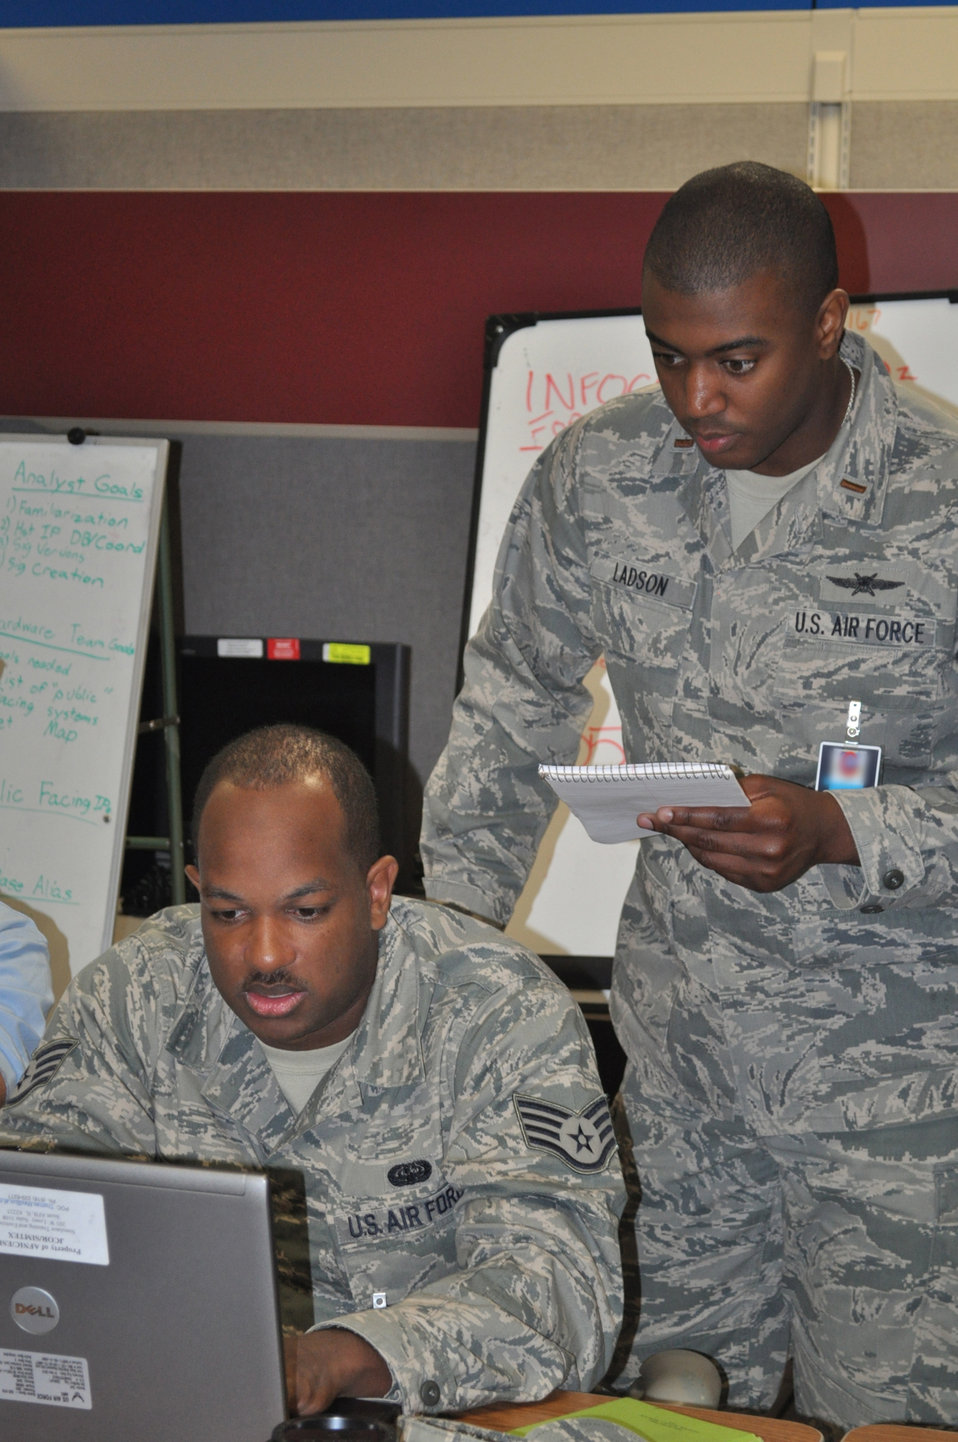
Cyber Nexus

Airmen from across the 67th Network Warfare Wing compete May 19, 2011, in Cyber Nexus, the wing's first force-on-force competition.